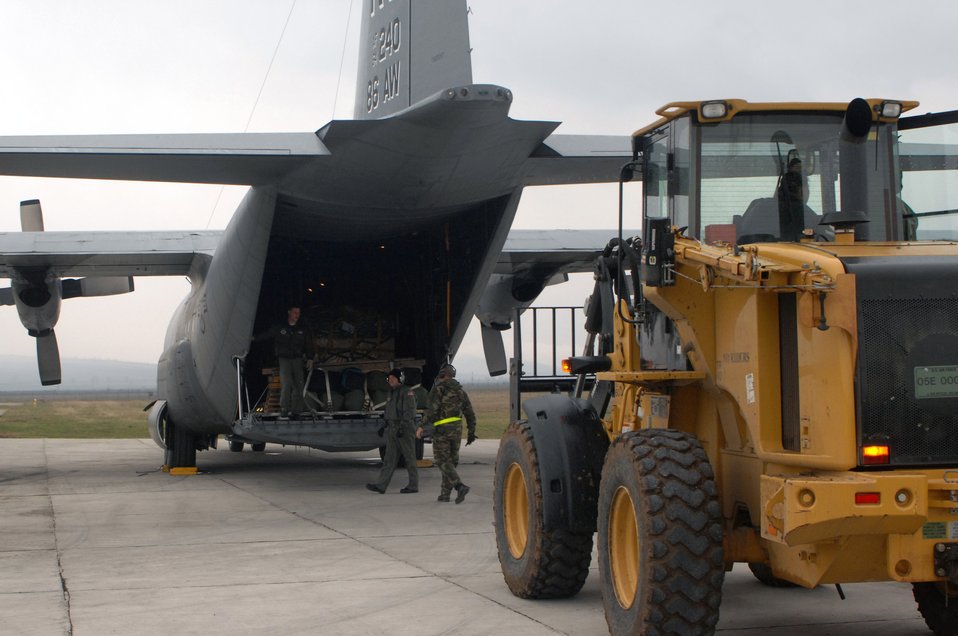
Logistics key to establishing deployed NATO mission operations

Airmen from the 404th Expeditionary Air Base Squadron unload pallets from a 86th Airlift Wing C-130 Hercules dropping off cargo and personnel here March 25. A four-man team of Airmen received and processed more than 500,000 pounds of cargo here toward building up U.S. operations at the base in support of the NATO summit. The U.S forces are augmenting NATO by providing infrastructure and aircraft for the duration of summit in Bucharest, Romania, April 2-4.